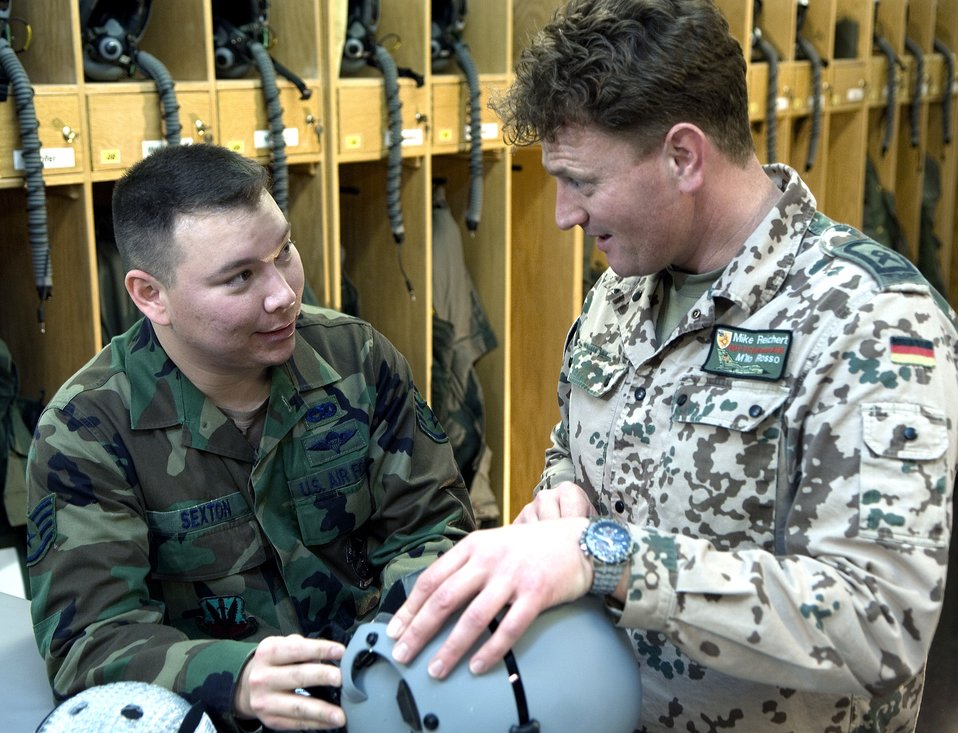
German airman assists with Holloman ceremony

German air force Master Sgt. Mike Reichert (right) trains Staff Sgt. Delray Sexton (left) on the HGU-55/G life support aircraft helmet during an exchange program between German and U.S. Air Force life support members Jan. 15 at Holloman Air Force Base, NM. The training initiative was established to build a strong working relationship between the two countries' life support squadrons.